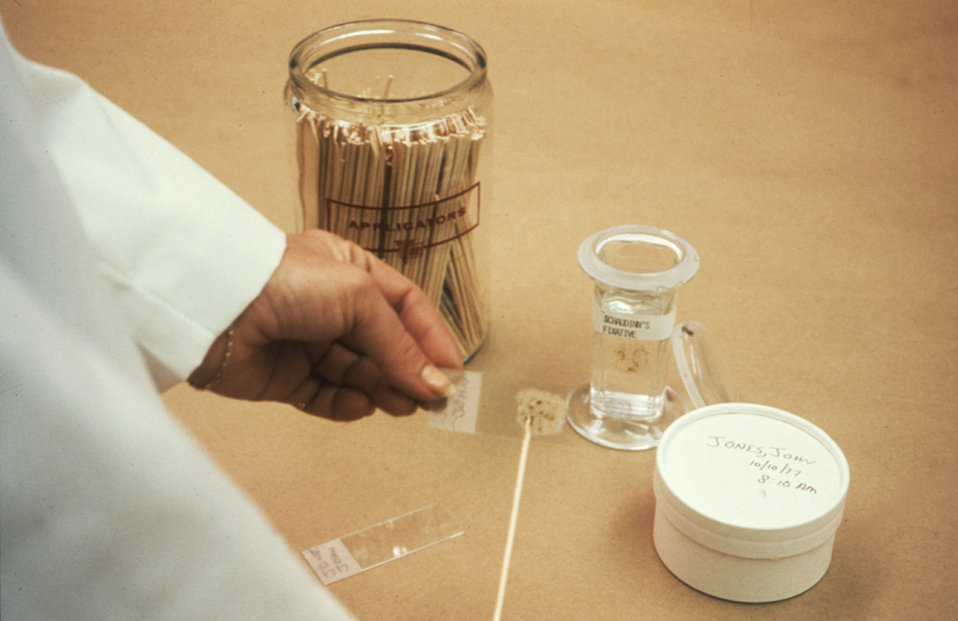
This lab technician is shown preparing a smear from a fresh, unpreserved fecal specimen.